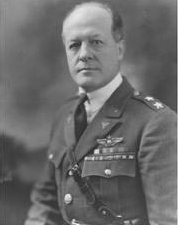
Major General Foulois

Maj. Gen. Benjamin Delahauf Foulois, the first chief of the Army Air Corps to be a military aviator, had a number of